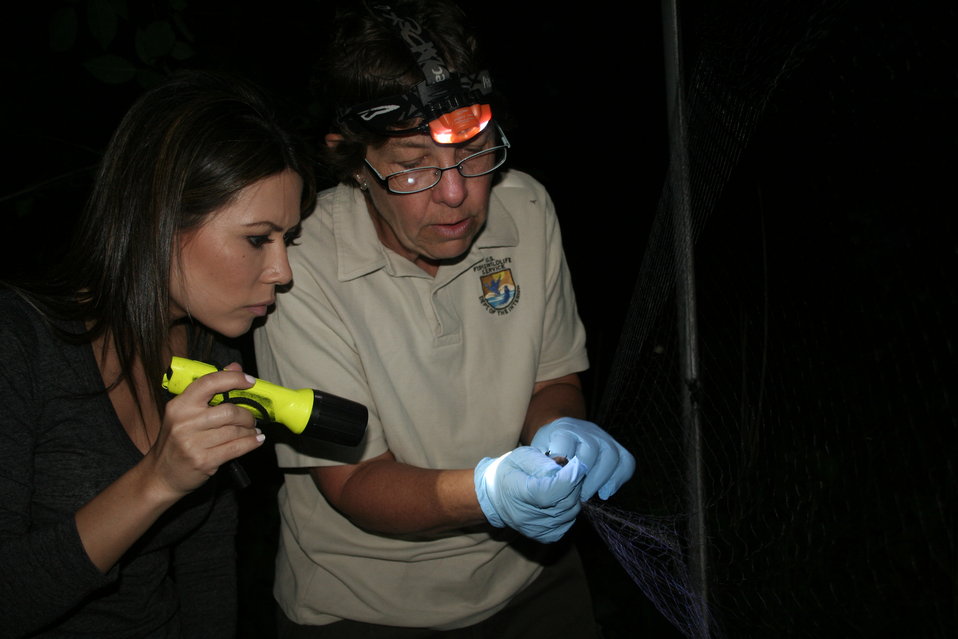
USFWS biologist with little brown bat

CBS Anchorwoman Betty Nguyen and USFWS endangered species biologist Susi von Oettingen